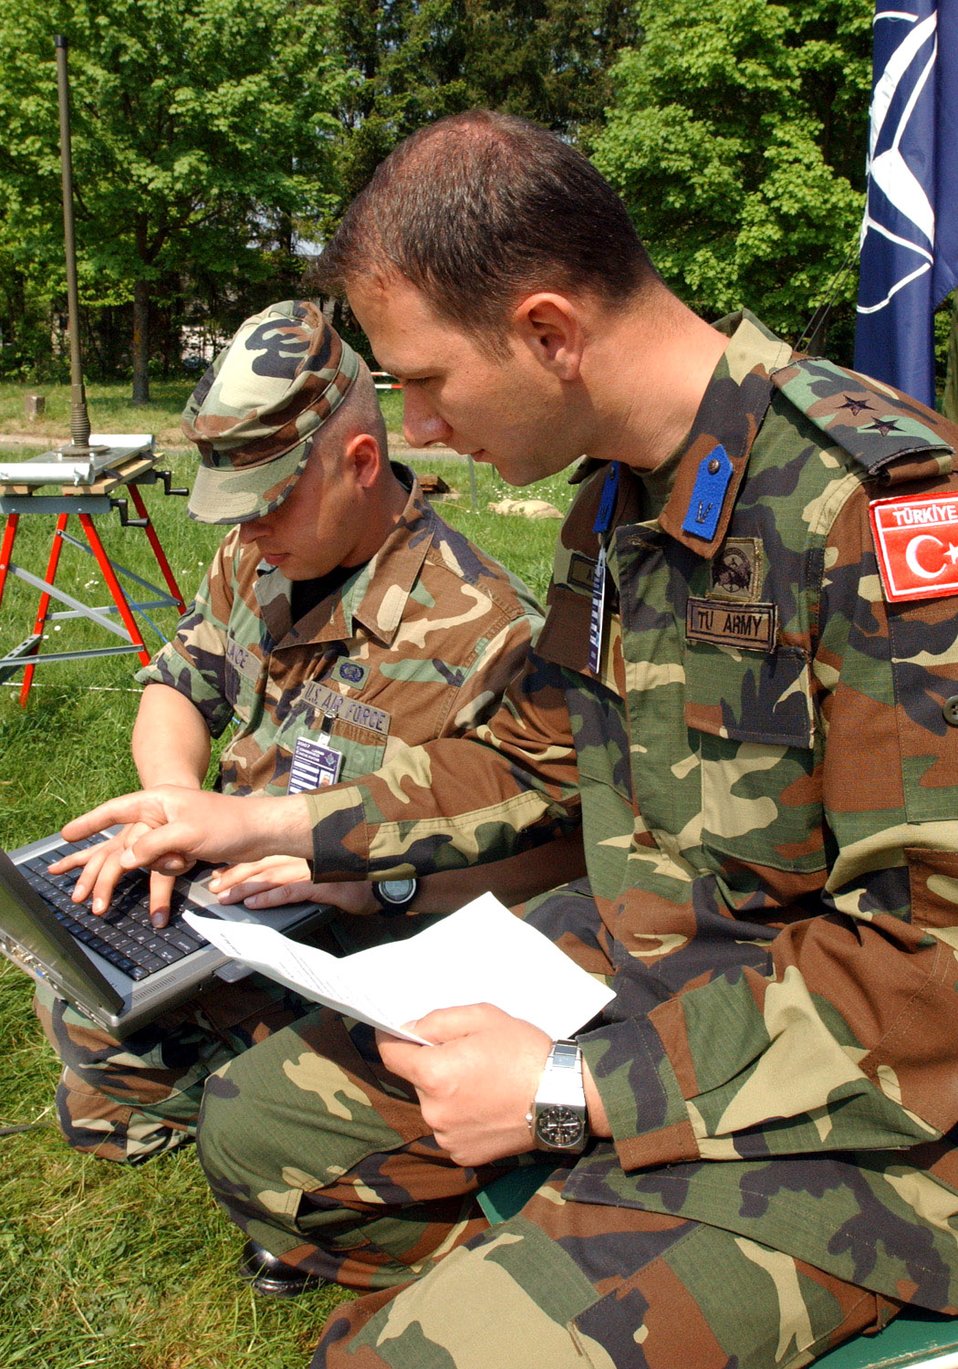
Multinational communicators network at seminars

Airman 1st Class Adam Wallace and Turkish 1st Lt. Burak Aksu input data into a laptop computer during exercise Combined Endeavor 2007 in Lager Aulenbach, Baumholder, Germany. The exercise, a U.S. European Command-sponsored exercise, brings the U.S. and other nations together, especially those in NATO or Partnership for Peace, to plan and execute interoperability testing of command, control, communications and computer systems in preparation for future combined humanitarian, peacekeeping and disaster relief operations.